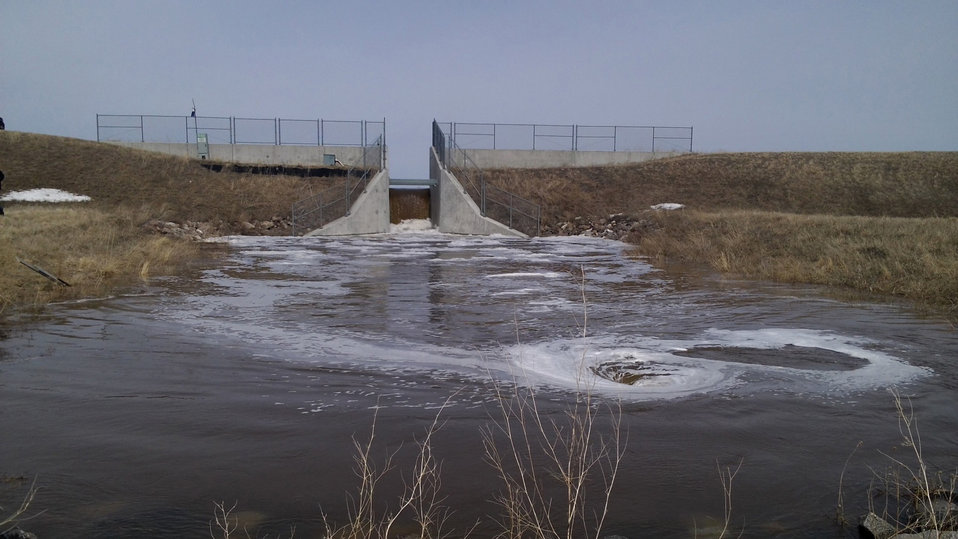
Wetlands all fully recharged and there is plenty of water in the off channel storage (OCS) structure, which is the main flood water holding pond for the project in Thief River Falls, MN on Apr. 27, 2013.